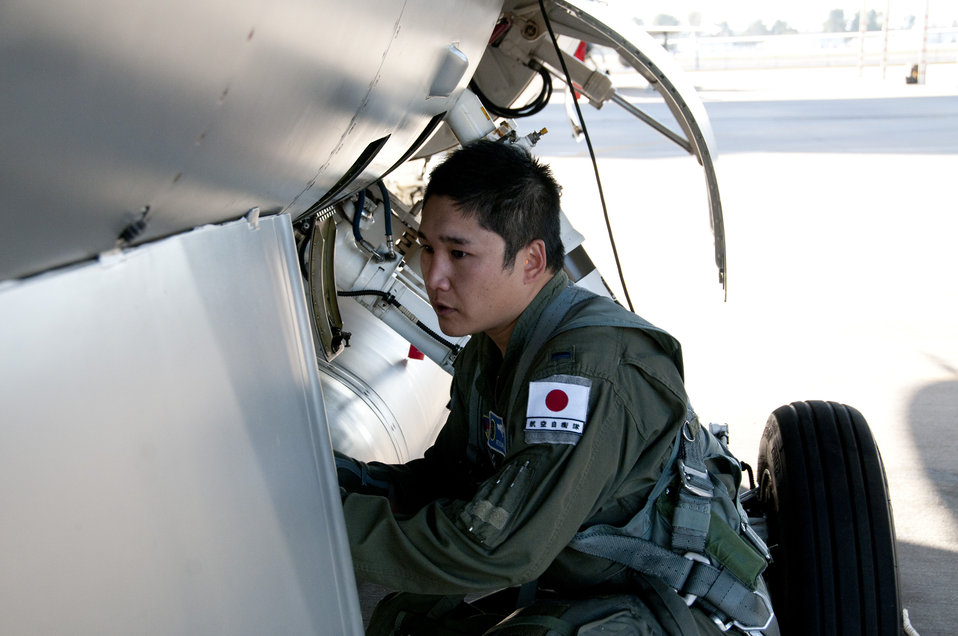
Arizona, Japanese Partnership

Japanese Air Self-Defense Force 1st Lt. Keisuke Ueda pre-flights an F-16
Fighting Falcon before a training sortie at Tucson International Airport,
Ariz., Feb. 22. Ueda is one of three Japanese students currently enrolled in
F-16 initial pilot training at the Arizona Air National Guard's 162nd
Fighter Wing.